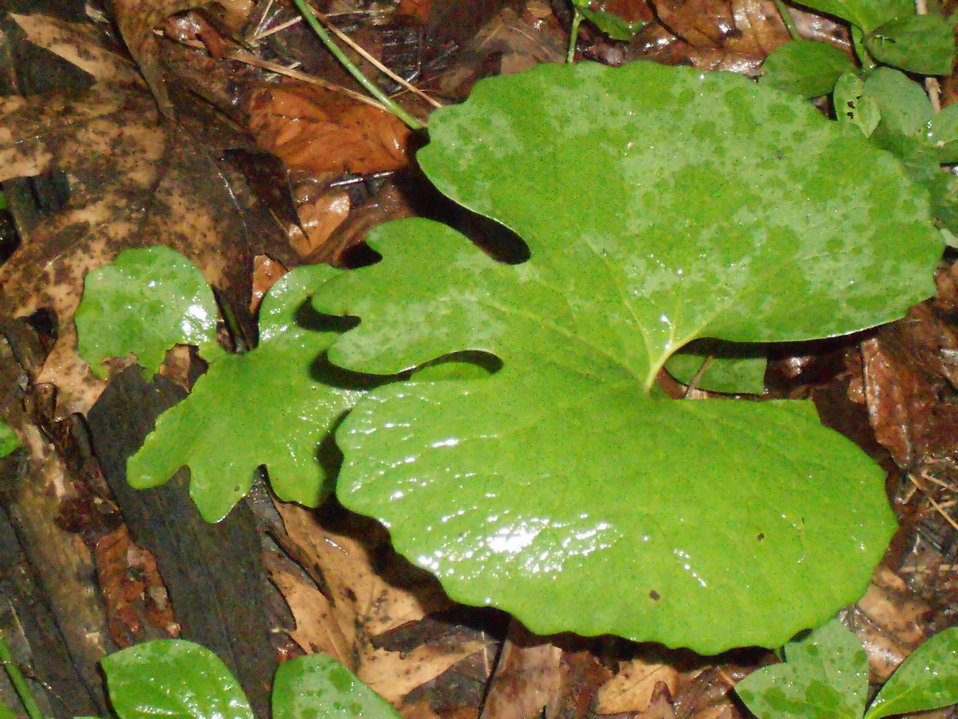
Leaf

Credit: USFWS

'I liked the leaf. It was a crazy shape! I would love to learn about that leaf. It was a cool shape, but a great color!' -Emily Reid